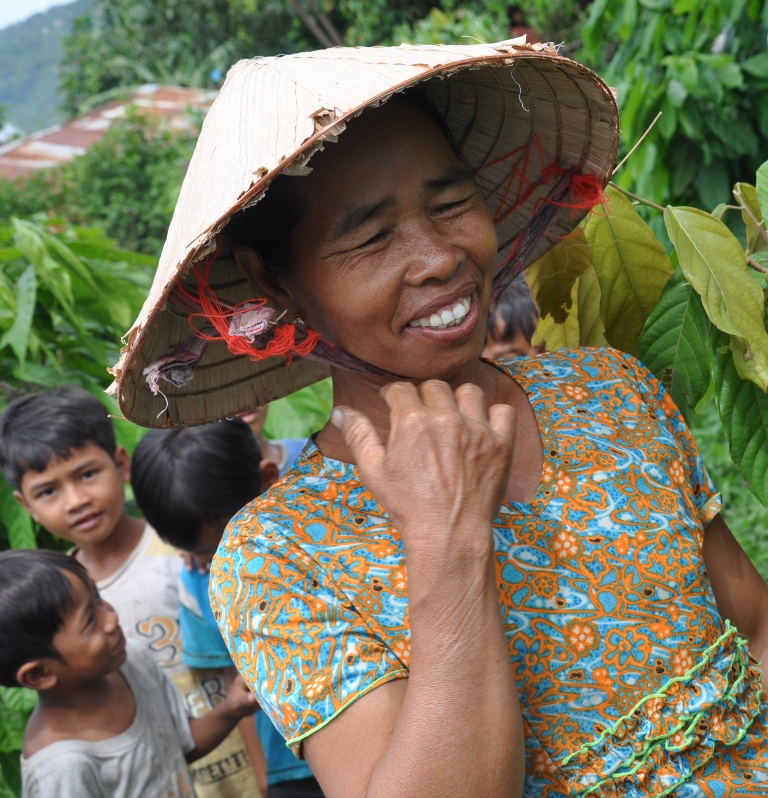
Farmers learn to plant cocoa and increase their profits in rural areas of Vietnam

A farmer and family matriarch is learning to profit from cocoa in Dak Lak Province of central Vietnam.